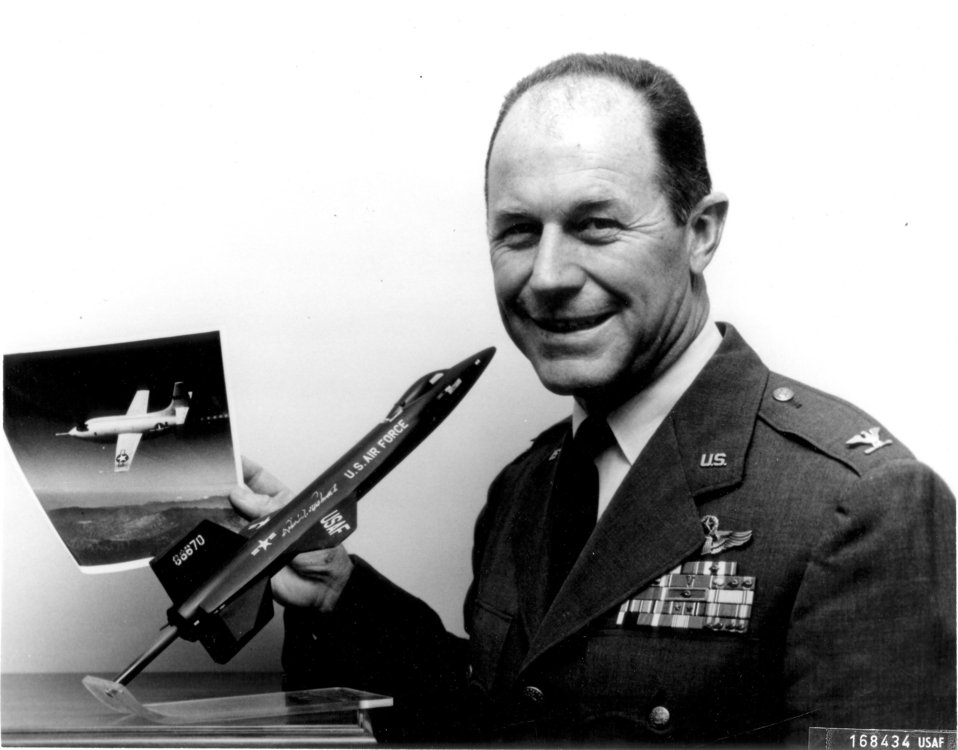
Charles Yeager

Col. Charles S. Yeager, Commandant of the USAF Aerospace Research Pilot School at the Air Force Flight Test Center, Edwards AFB, Calif., poses with a model of the North American X-15 high speed, high-altitude research aircraft. He holds a photograph of the Bell X-1 aircraft in which he became the first man to fly faster than the speed of sound on Oct. 14, 1947.